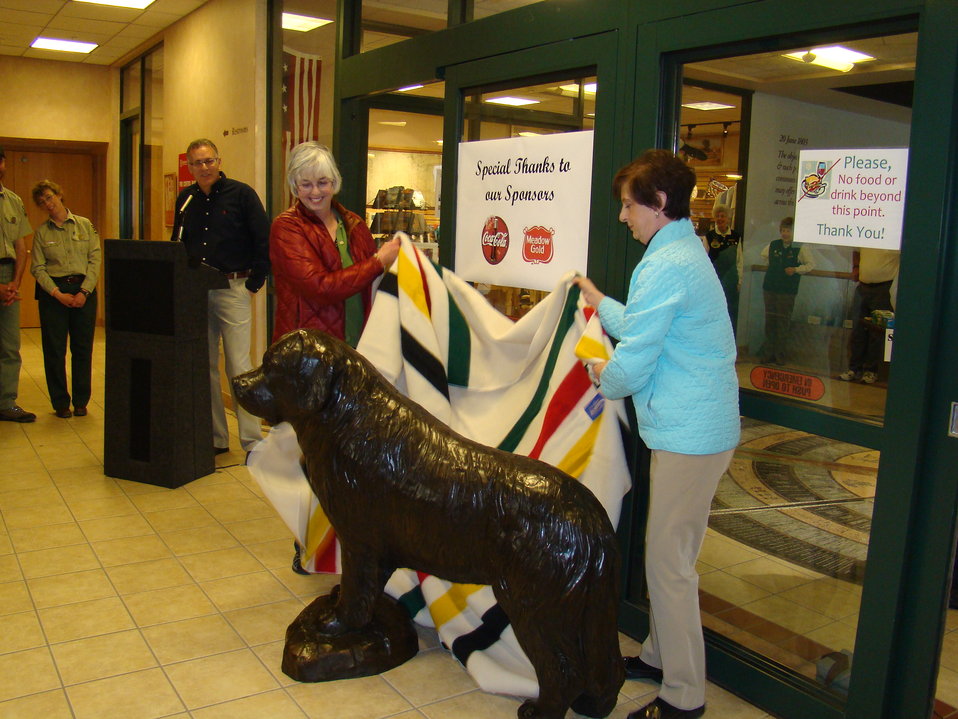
Seaman statute 2

The life-sized statue of Seaman, the famed Newfoundland dog who accompanied the Lewis & Clark expedition, is unveiled at the Lewis & Clark Interpretive Center by (left) Margaret Halko, the widow of the statue's sculptor Joe Halko; and Carol Mungus, whose dog 'Windsor' stood as the model for Halko's creation.